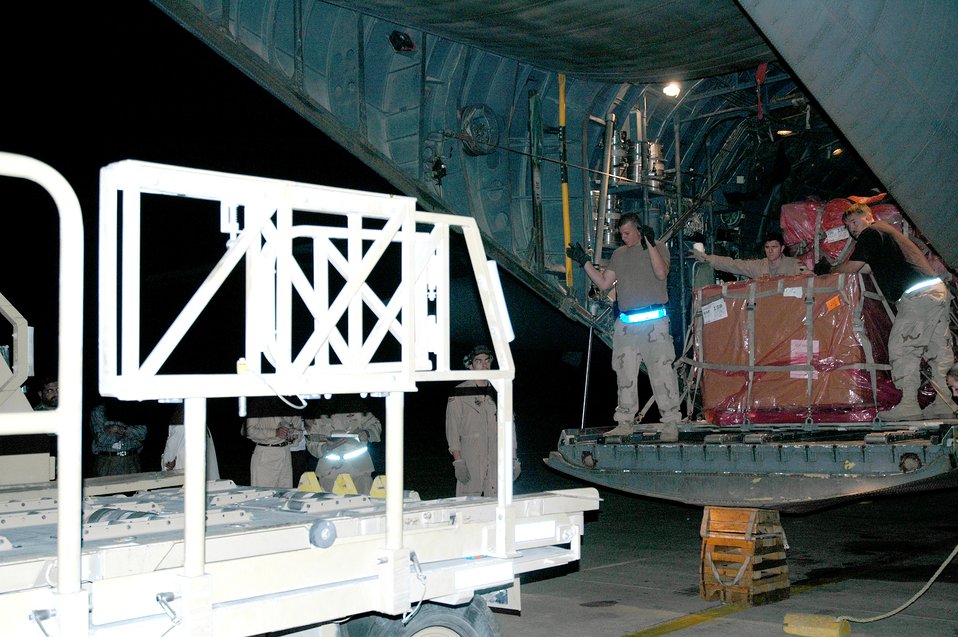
Pakistan relief efforts

CHAKLALA, Pakistan -- Airmen here transport supplies from a C-130 Hercules to a hangar. The hangar is used to store the tons of relief supplies arriving here to aid the survivors of the massive Oct. 8 earthquake.